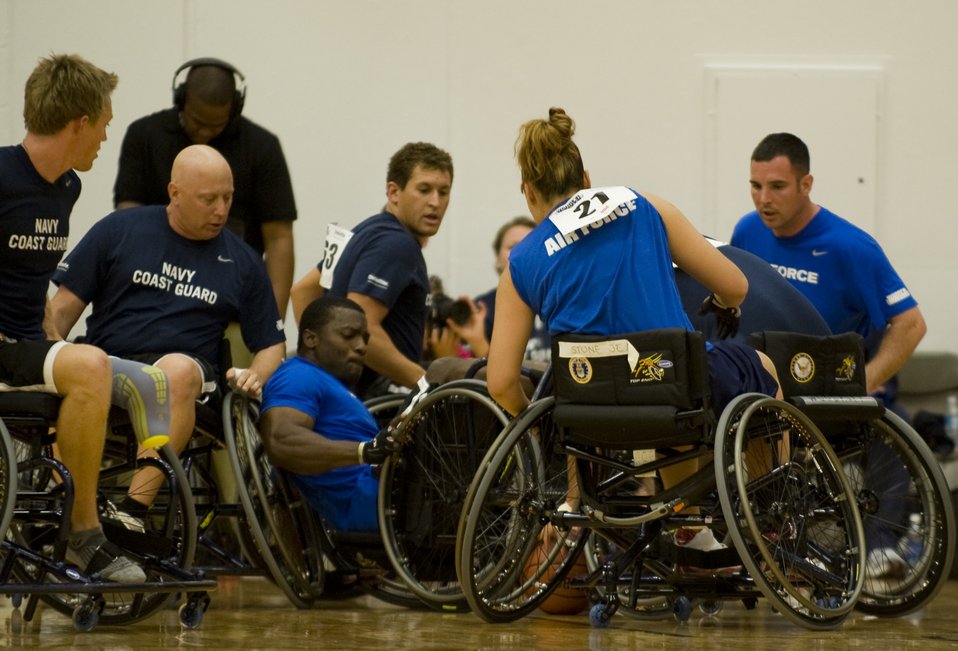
Warrior Games BasketBall

The Air Force wheelchair basketball team battles the Navy team for possession of the ball May 17, 2011, during the 2011 Warrior Games in Colorado Springs, Colo. The Navy beat the Air Force 23-14 and next will face the Marine Corps. The Air Force team will play the Army.